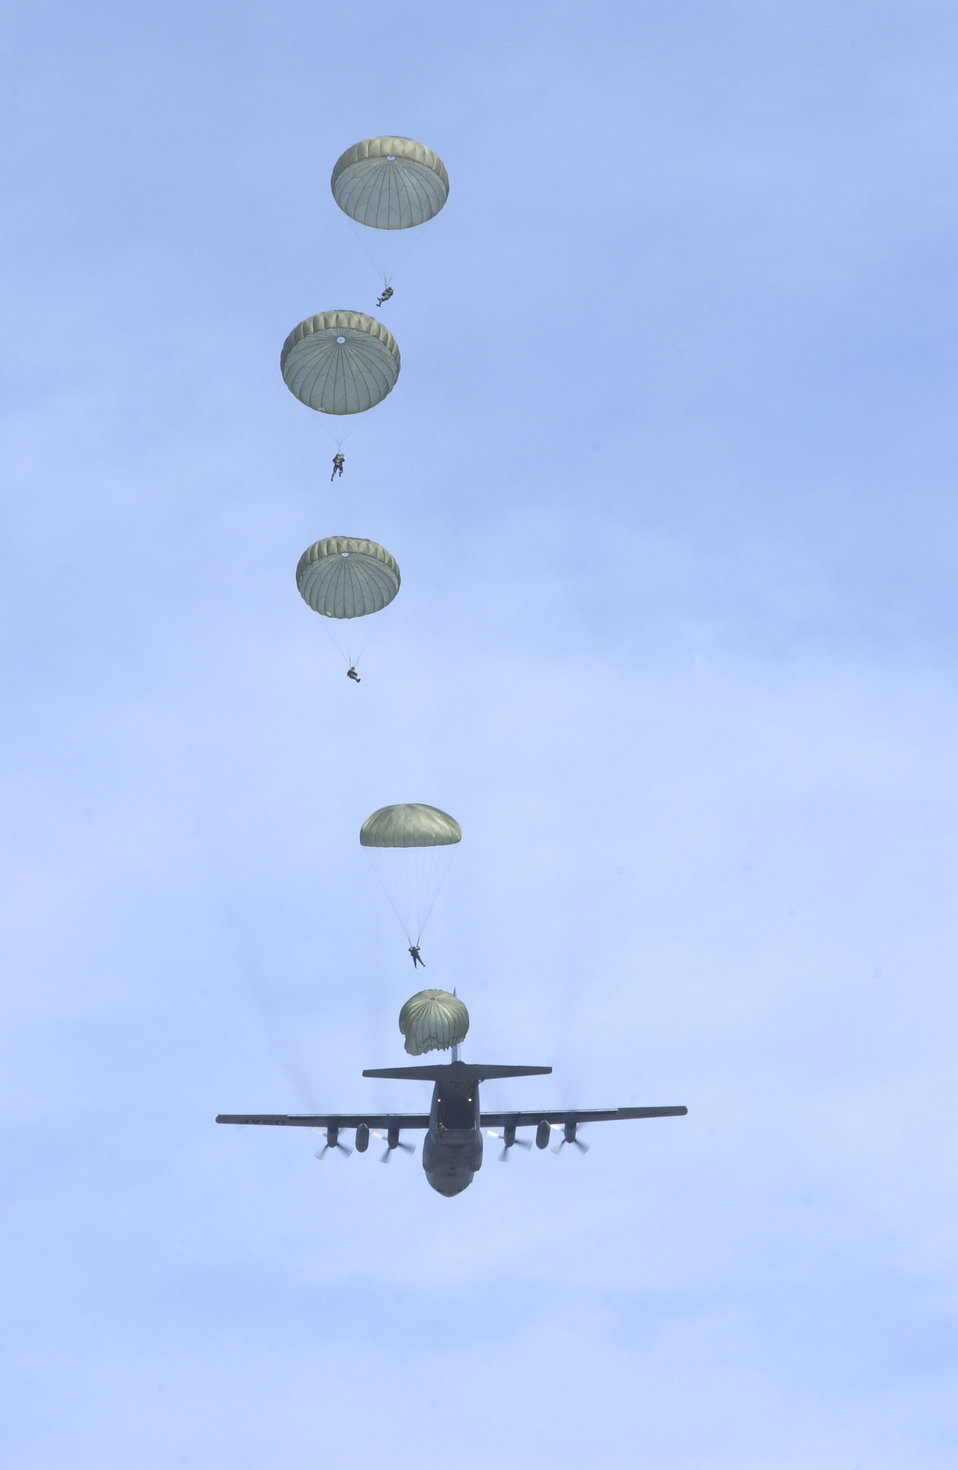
Jump school

FORT LEE, Va. -- Students of the Aerial Delivery and Field Services Department located at the U.S. Army Quartermaster Center and School here, jump from a C-130 Hercules out of Pittsburg, Pa., March 27. The training provides students the practice they need to perform their jobs in an operational environment.